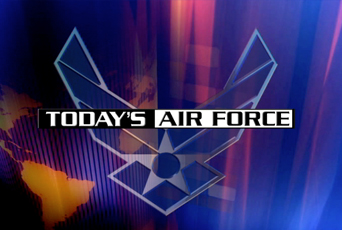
Latest 'Today's Air Force' now available